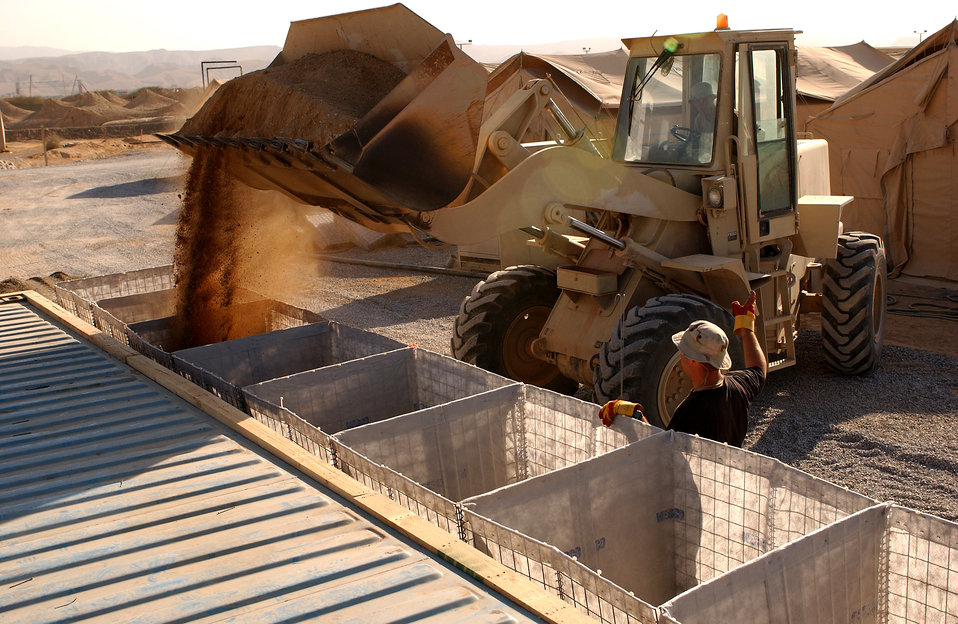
Bunker building

OPERATION ENDURING FREEDOM (AFPN) -- Senior Airman Kerry Parsons fills the outside wall of a protective bunker with dirt as Staff Sgt. Ken Duplechin guides him in. Both airmen are equipment operators with the 320th Expeditionary Civil Engineer Squadron.